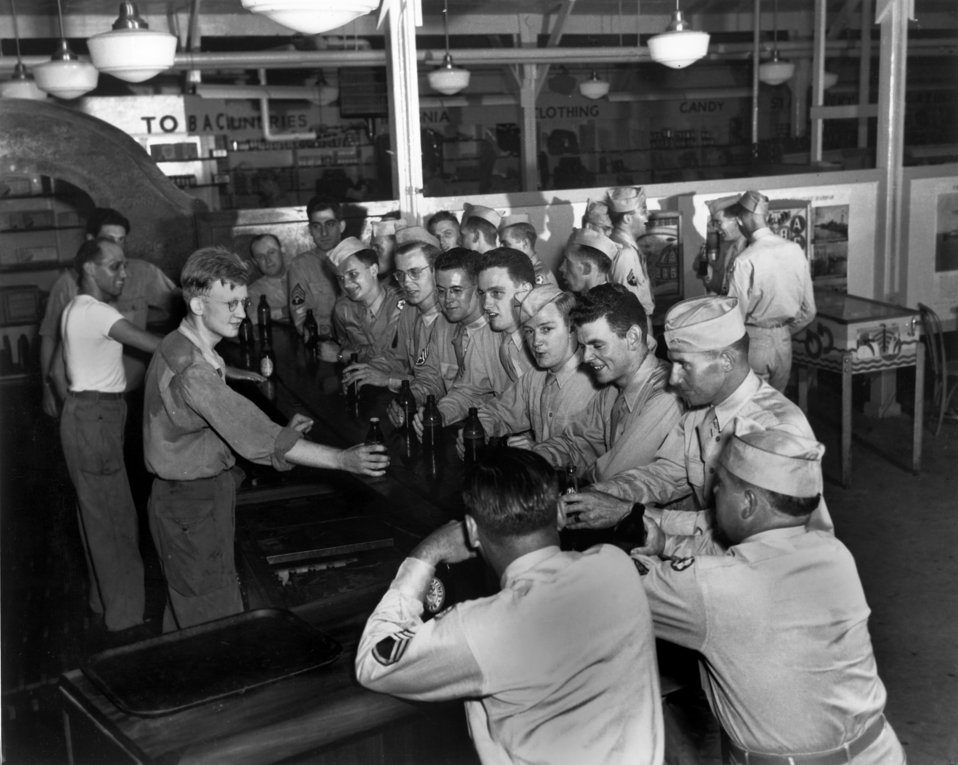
Army PX Oak Ridge

1657-1 DOE photo by Ed Westcott

Army PX Oak Ridge Tennessee 9-20-1945